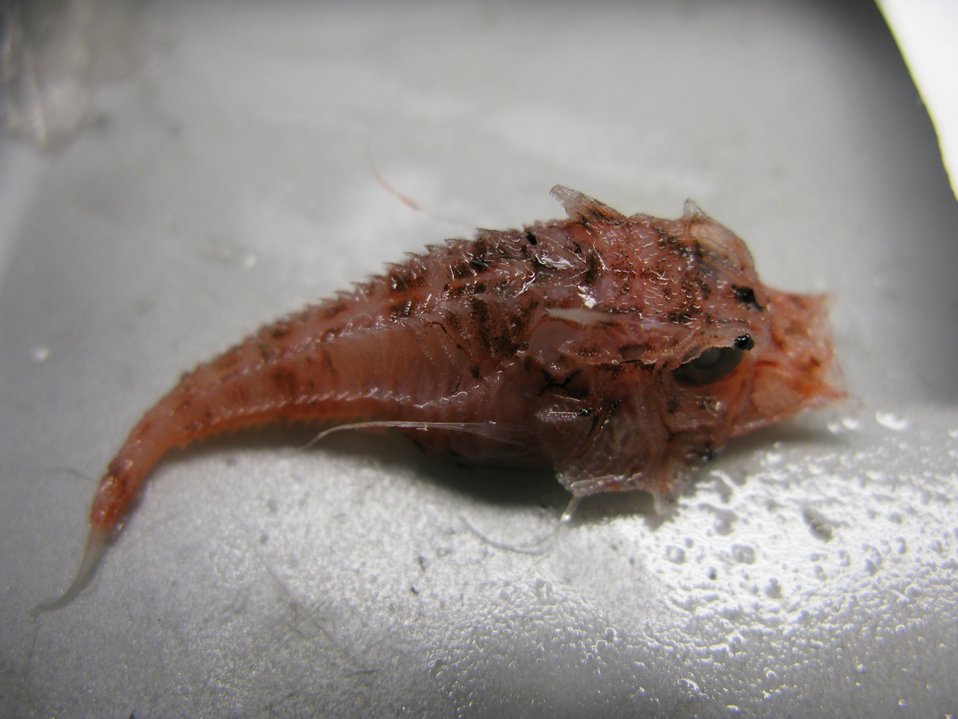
Juvenile gurnard ? (Peristedion sp.?)